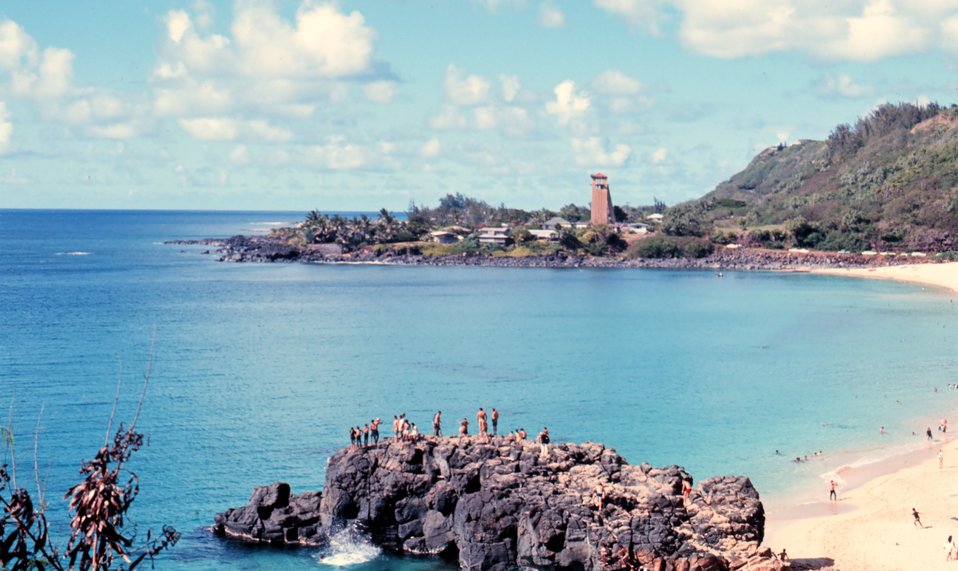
Waimea Bay on a calm day